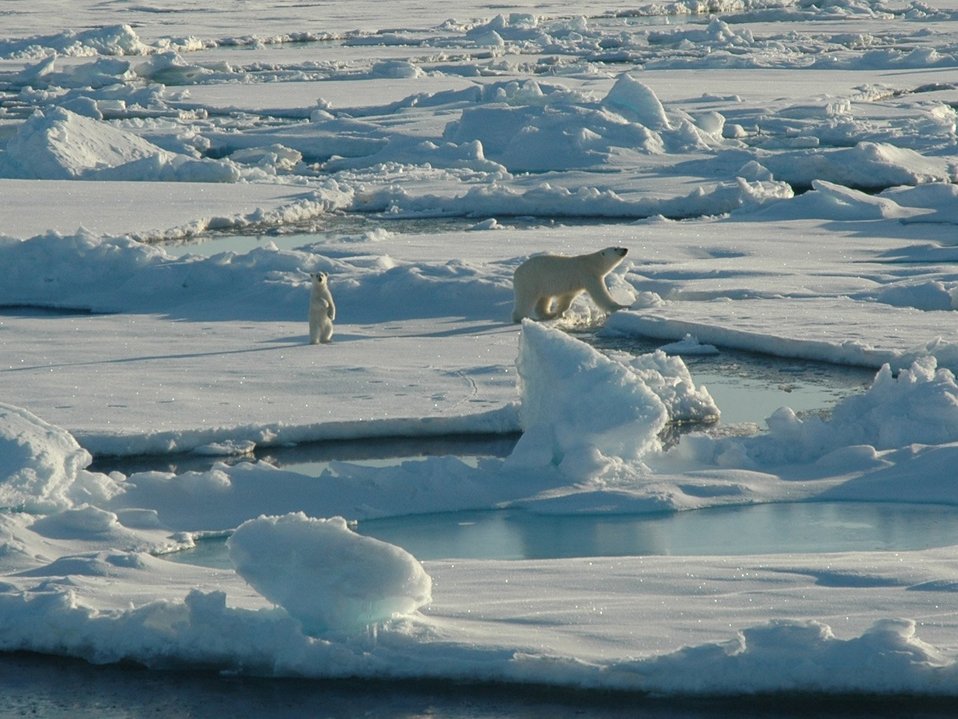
Polar bear with curious cub on first year ice floes